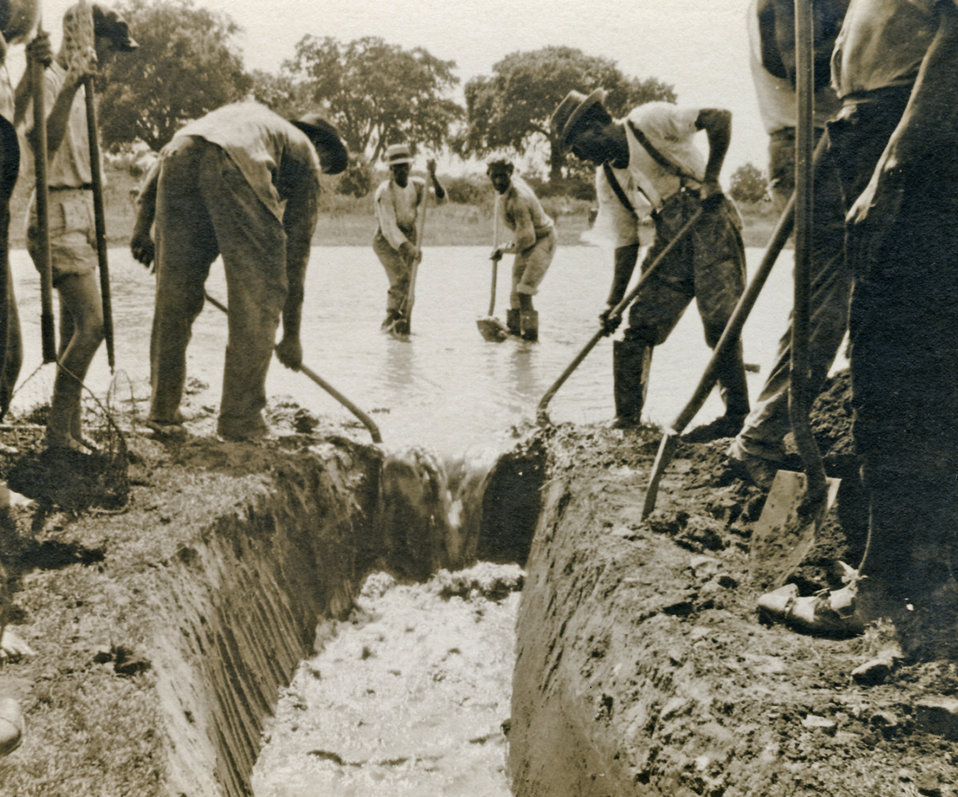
This 1920s photograph, taken somewhere in the southern United States, showed workers practicing 'vector control' by digging a drainage ditch, in order to help disperse standing water that was acting as a popular breeding ground for a population of Anopheles mosquitoes, a well known vector for the parasitic disease, malaria.